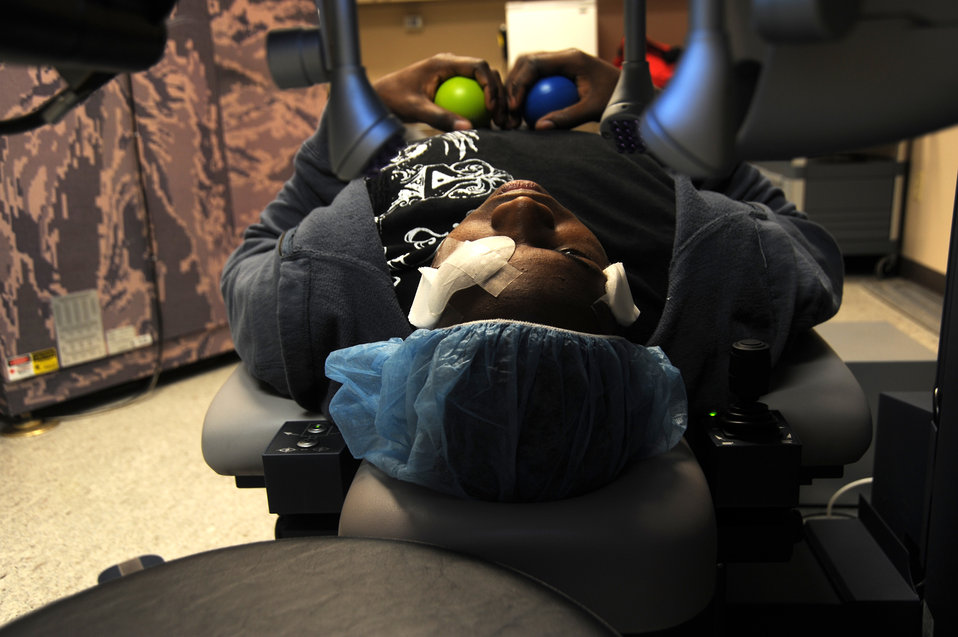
WHMC LASIK

Army Staff Sgt. Stanley Arnold awaits the second half of his LASIK refractive surgery March 3, 2011, at the Joint Refractive Surgery Center at Lackland Air Force Base, Texas. The laser will lay down a treatment to smooth the surface of his eye, which will improve his vision. Sergeant Arnold is an instructor and infantryman at Ft. Huachuca, Ariz.